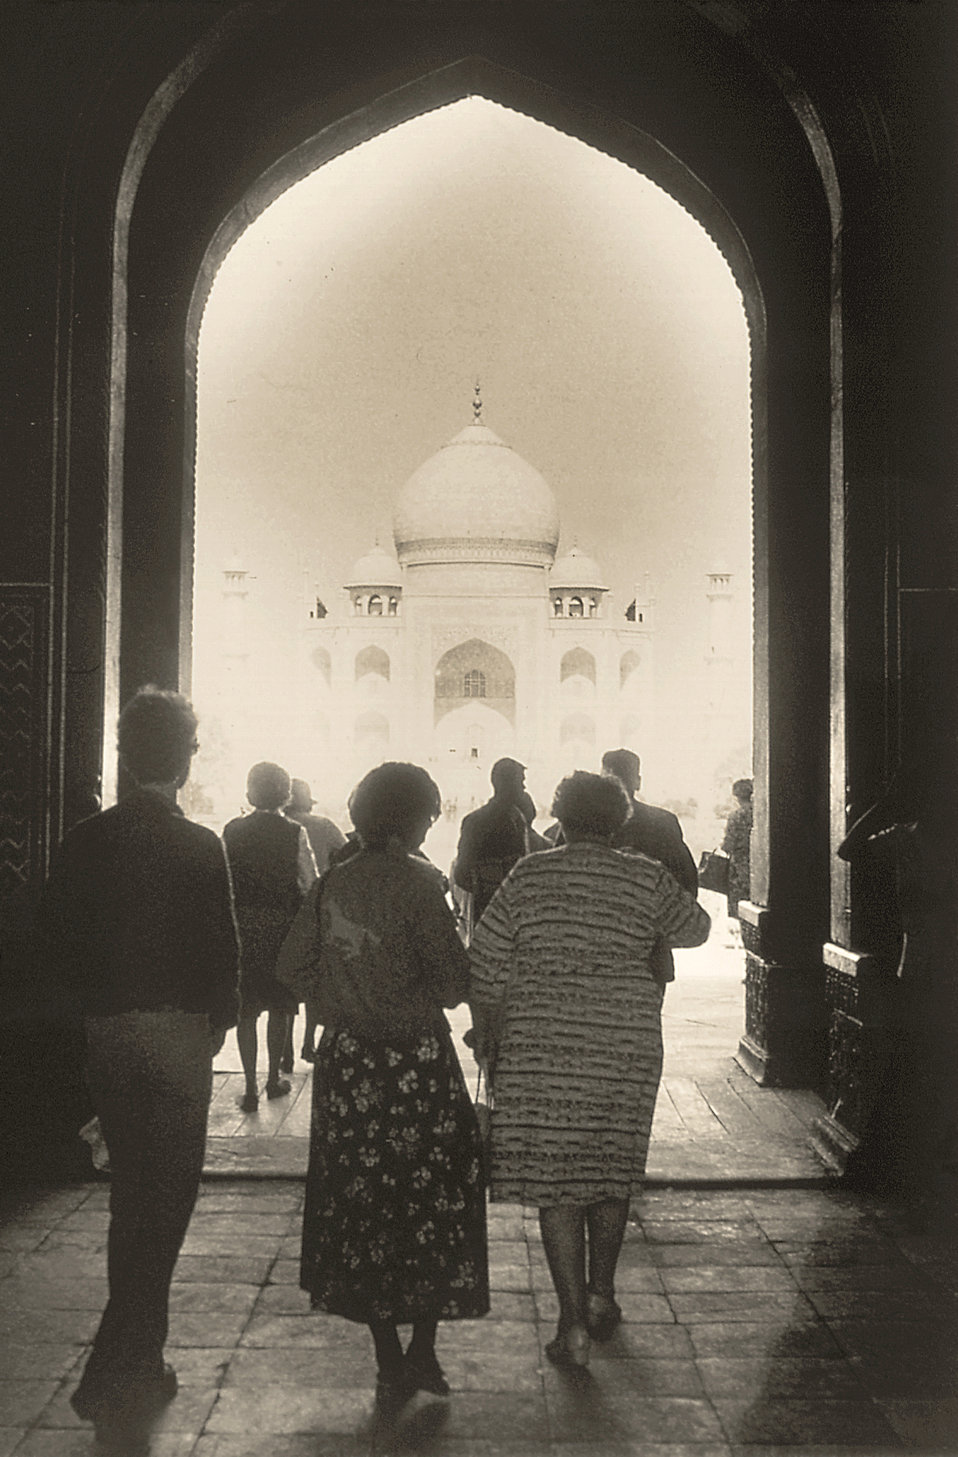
This image depicts the wondrous Taj Mahal in Agra, India in the country's northern state of Uttar Pradesh. The structure is 226 miles west of the state capital, Lucknow, and 124 miles to the south of India's capital city of New Delhi.